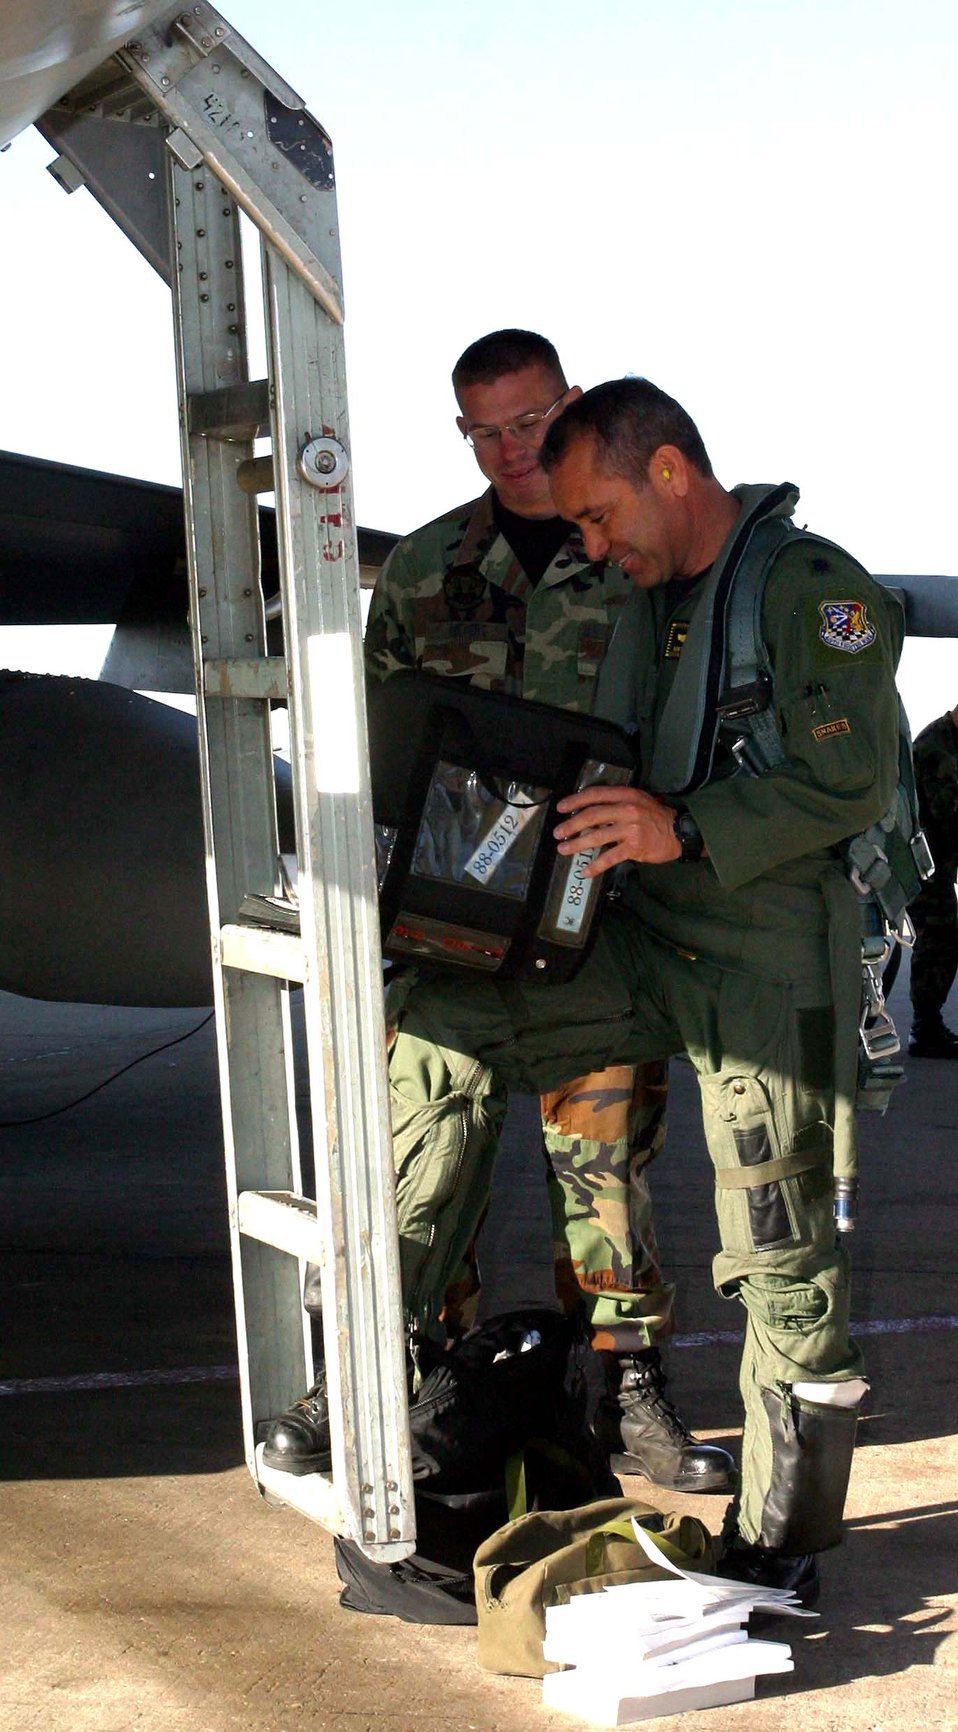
Crew chief meets childhood hero at Hill

Airman 1st Class Jeremy Meyers and Lt. Col. Kurt Gallegos review procedures before flight. Airman Meyers was able to meet Colonel Gallegos and was also given the opportunity to work as his crew chief for the day.